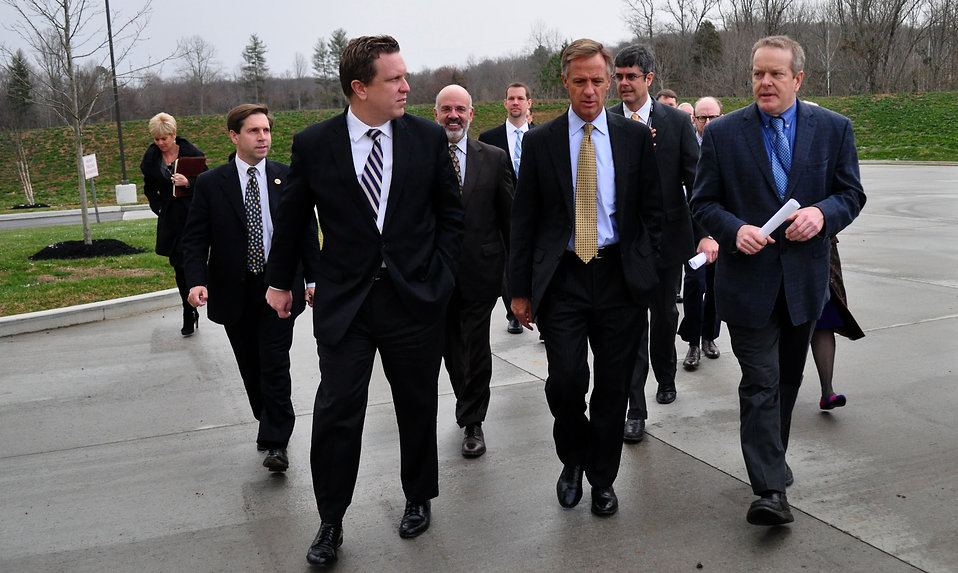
Carbon Fiber Technology Facilty Open House Oak Ridge Tennessee

13-025 DOE photo Lynn Freeny